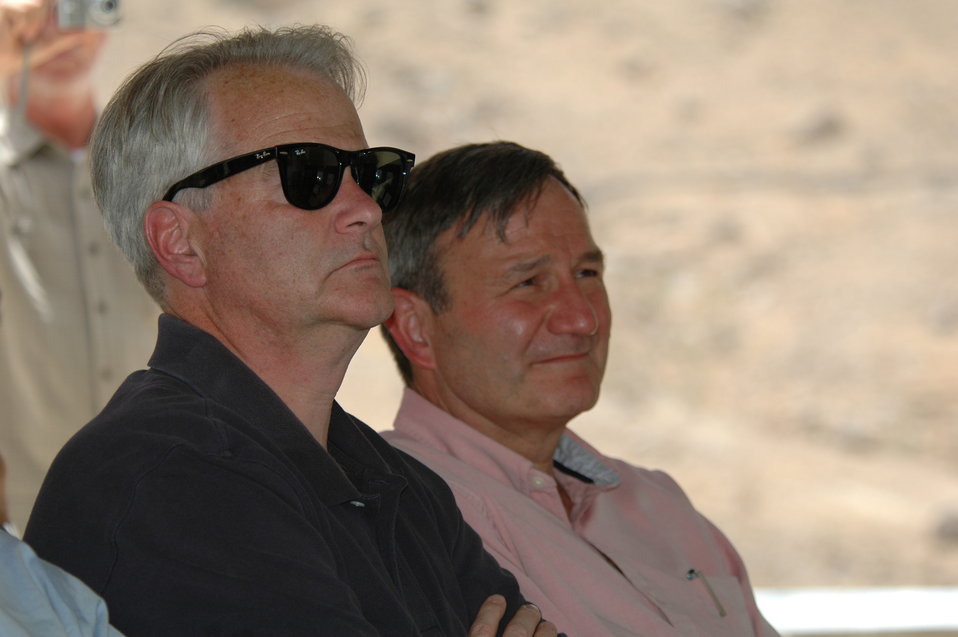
CODEL Berman